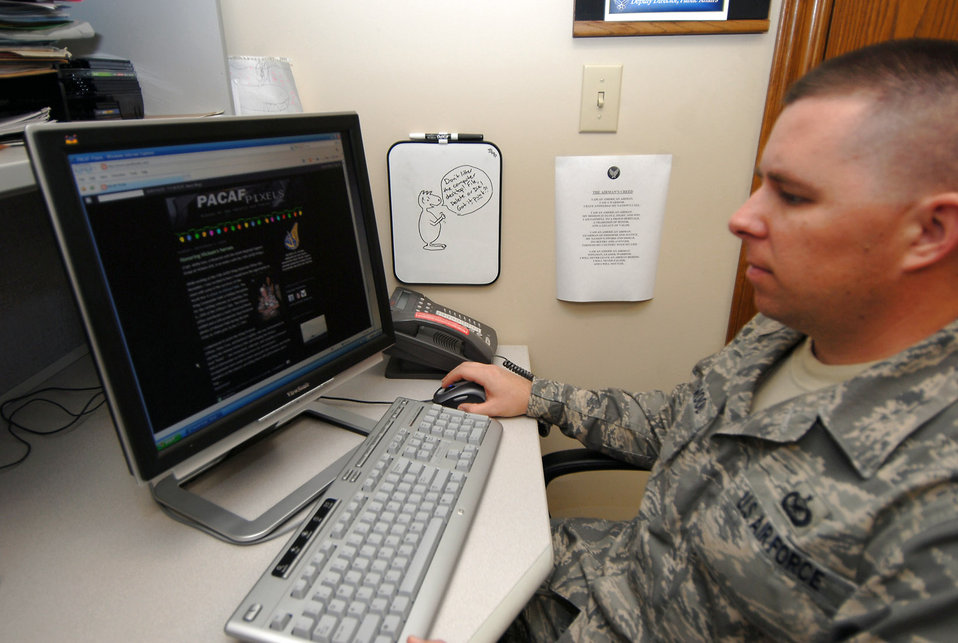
PACAF officials look to blogging to tell Air Force story

Tech. Sgt. Bryan Gatewood checks on comments posted on the